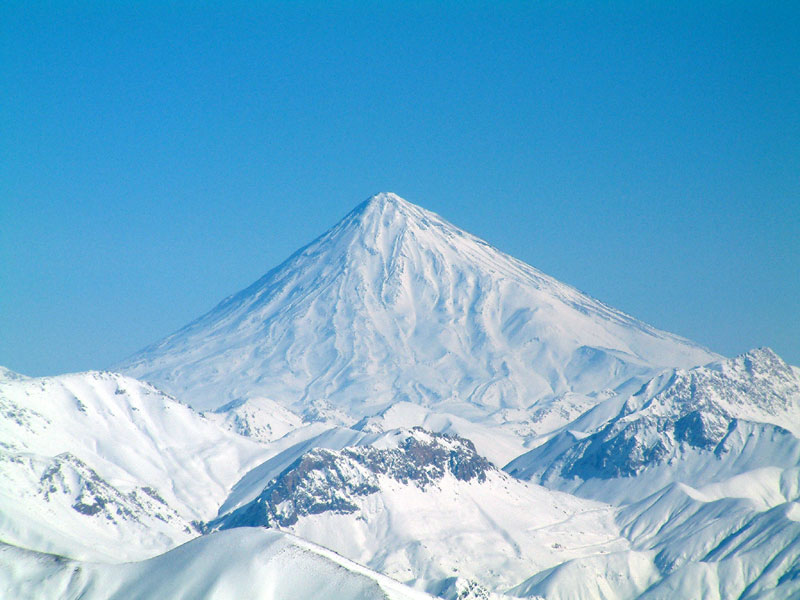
Mount Damavand in winter, Iran.